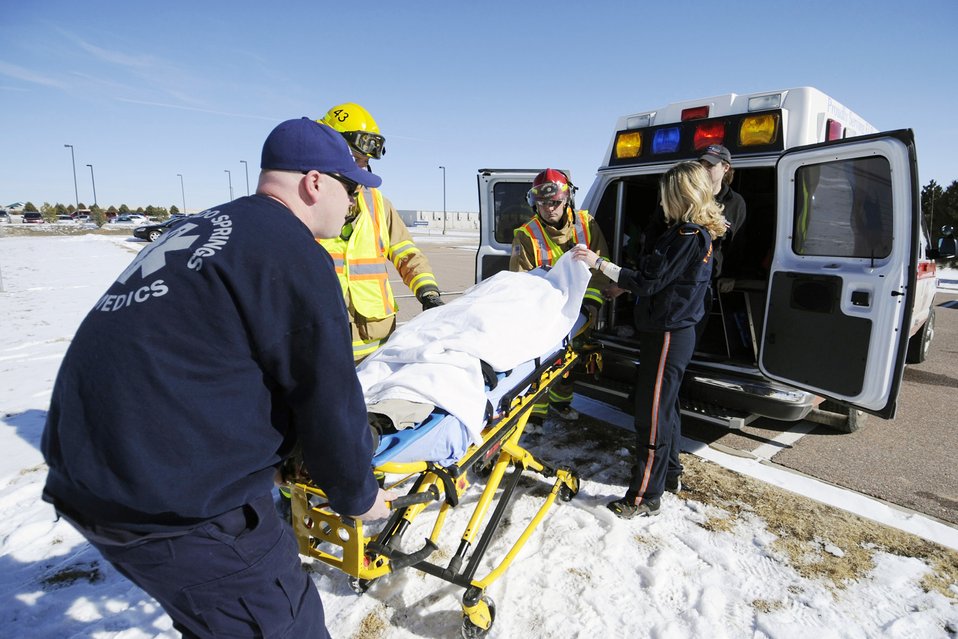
Schriever trains for emergencies

Base emergency services members move a